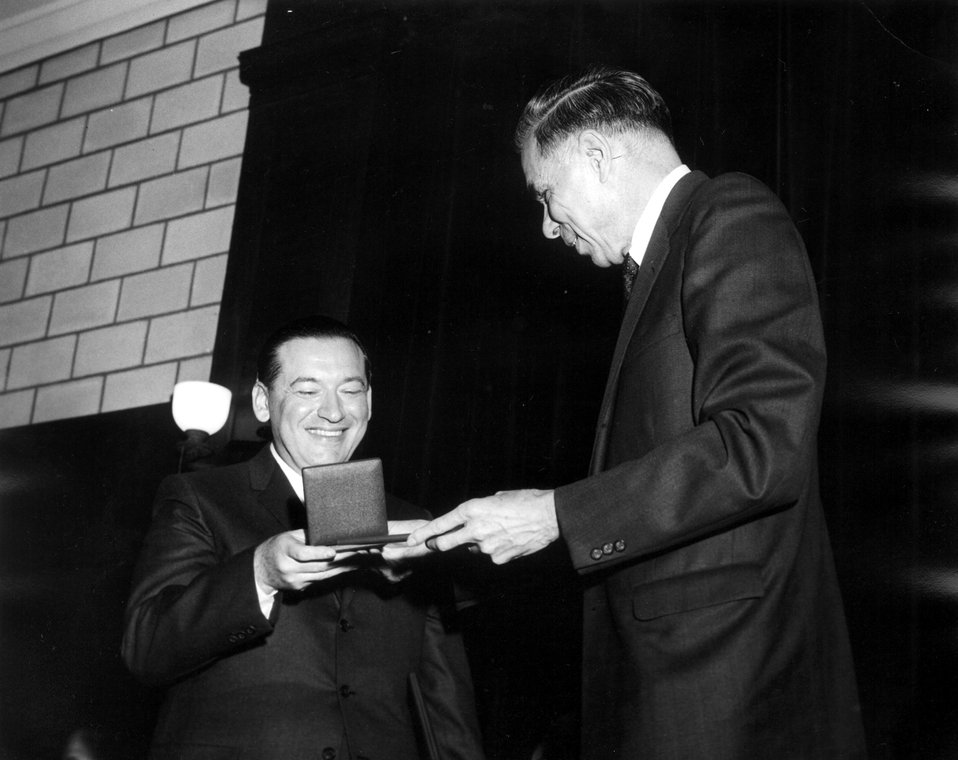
Lawrence Award, 1966.